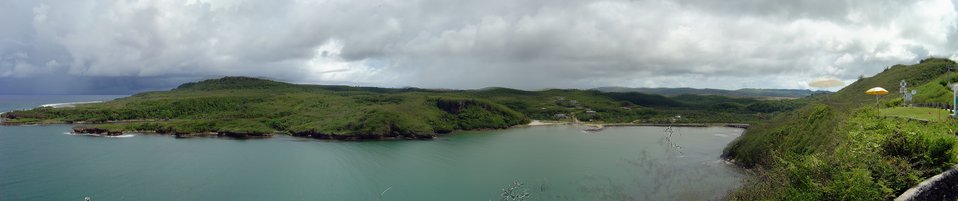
Talofofo Bay mosaic, Guam coastline.